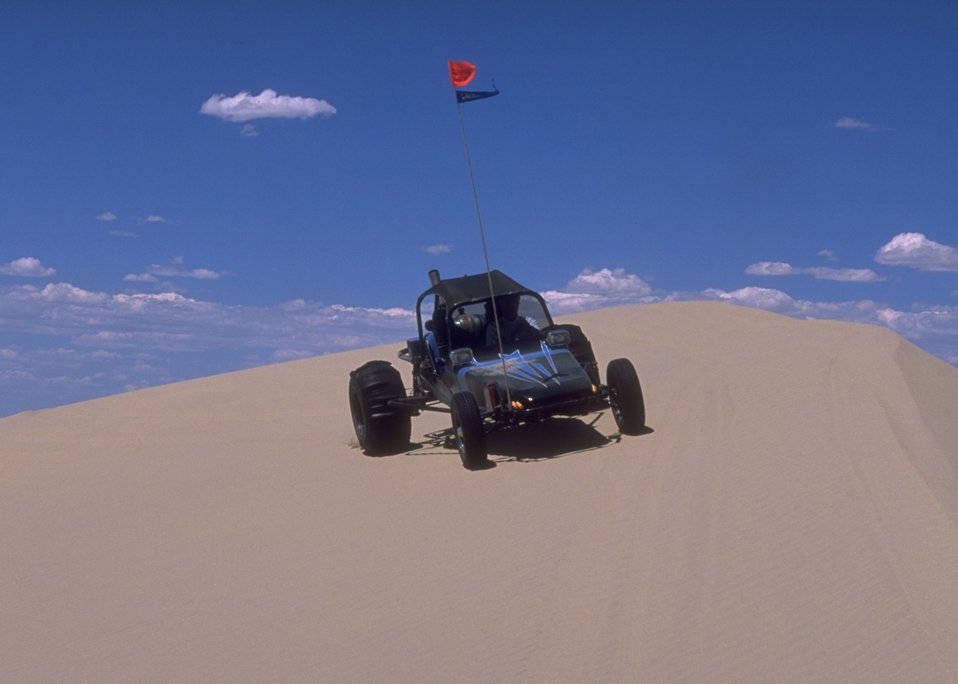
Sand Dunes OHV Area, Rock Springs Field Office.